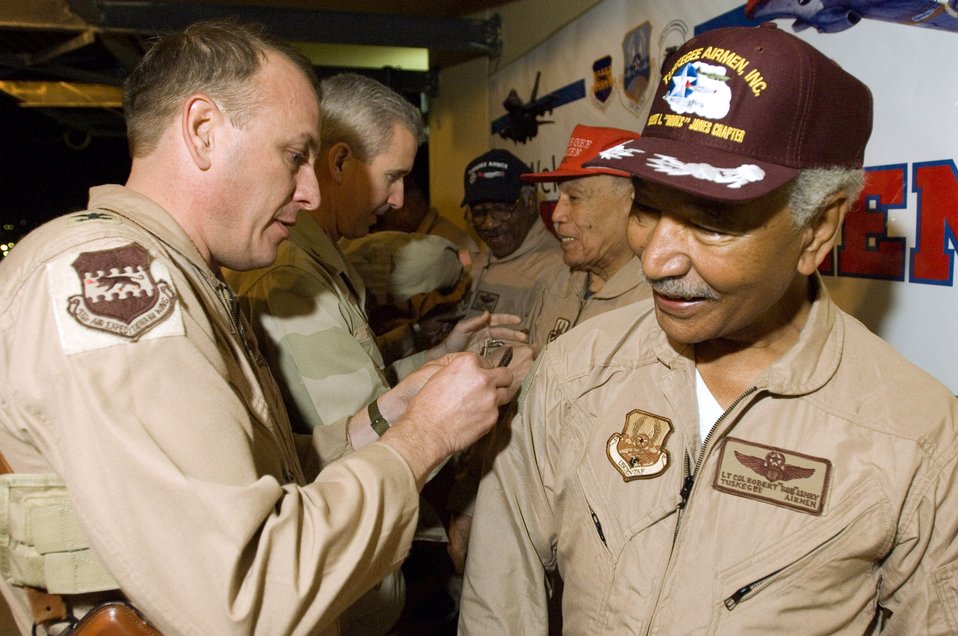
Tuskegee Airmen return to warzone

BALAD AIR BASE, Iraq (AFPN) -- Col. Gordon Jacobs (left) puts wing patches onto the uniform of retired Tuskegee Airman Lt. Col Robert Ashby. Colonel Ashby is one of five Tuskegee Airman visiting here. Colonel Jacobs is the 332nd Expeditionary Operations Group commander. The Army created the Tuskegee Airmen unit in 1941.